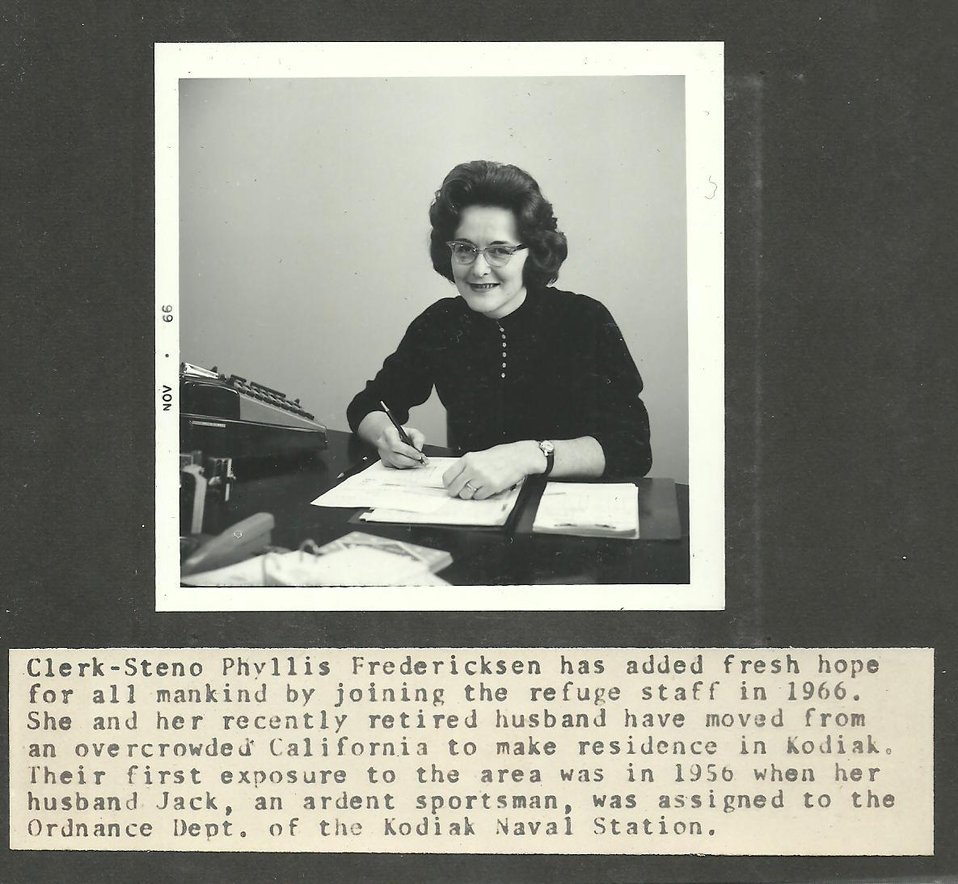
(1966) Clerk-Steno Fredericksen

Credit: USFWS

Source and Contact: Kodiak National Wildlife Refuge